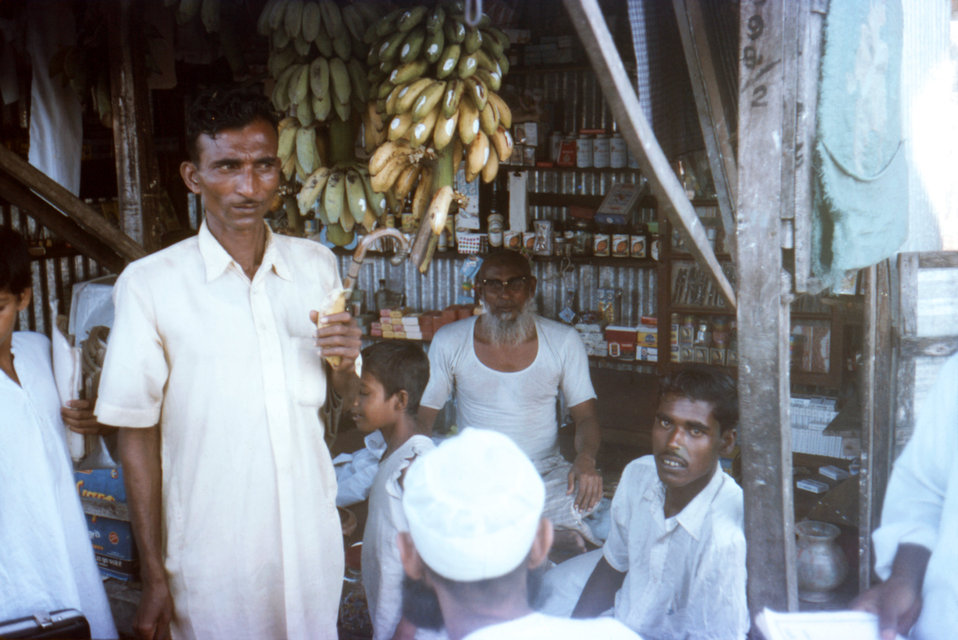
This October, 1975 image depicted a number of Bangladeshi villagers, who'd gathered at a food stall located in a Patuakhali District village, in South-western Bangladesh. See PHIL 12354, for a view of this market from a window in the nearby Hotel Bonanee.